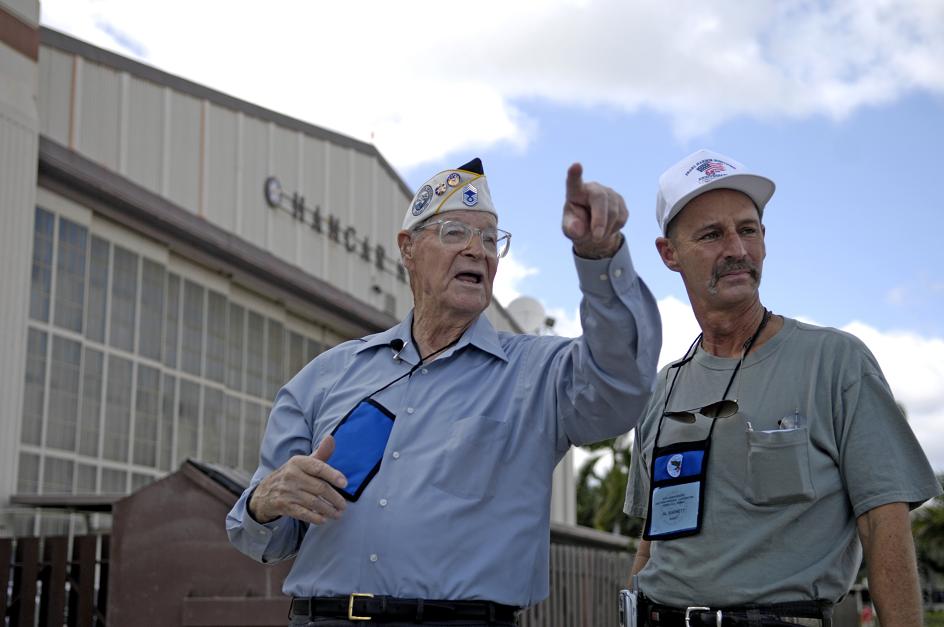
Retired Chief Master Sgt. Ralph Barnett describes landmarks to his son Al Barnett during a visit Dec. 4 to Hickam Air Force Base, Hawaii. Chief Barnett was stationed at Hickam Field as a young sergeant when the Japanese launched a surprise attack Dec. 7, 1941.